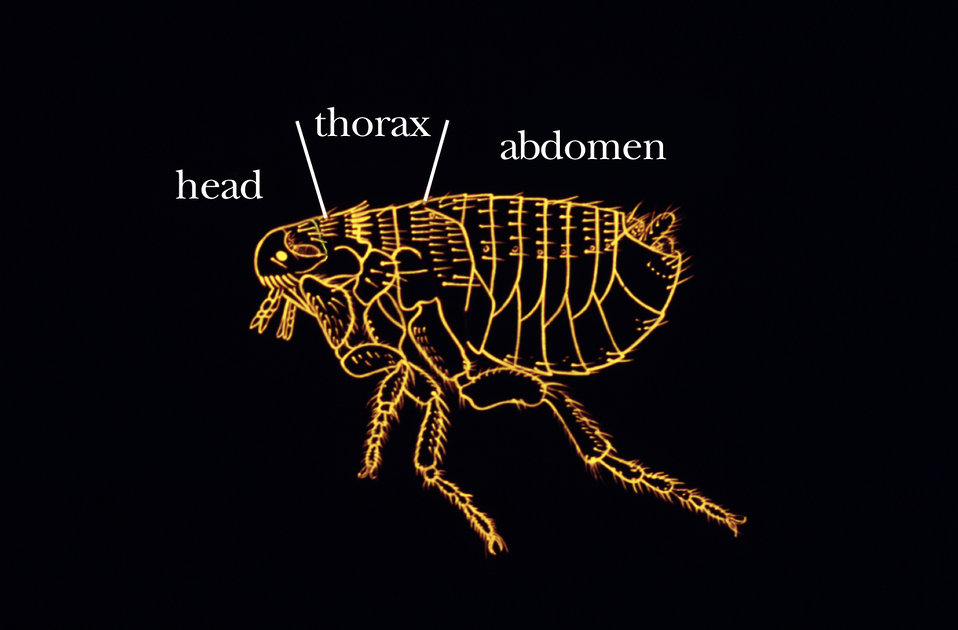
This illustration shows some of the major morphologic regions comprising the exoskeletal body of a common flea.